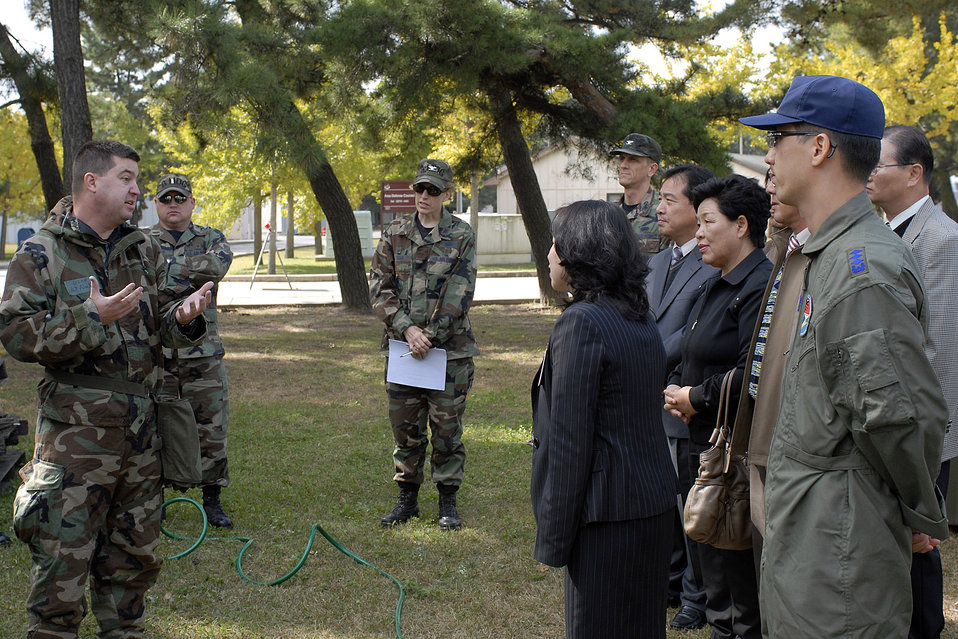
Officials show off expeditionary medical system

Lt. Alan Mirly explains the critical mission of the expeditionary medical system to visitors at Kunsan Air Base, South Korea Oct. 29. Lieutenant Mirly is deployed with the Air Force Reserve Command's 944th Medical Squadron. Their mission is to receive training with the expeditionary medical system 25-bed theater hospital.)